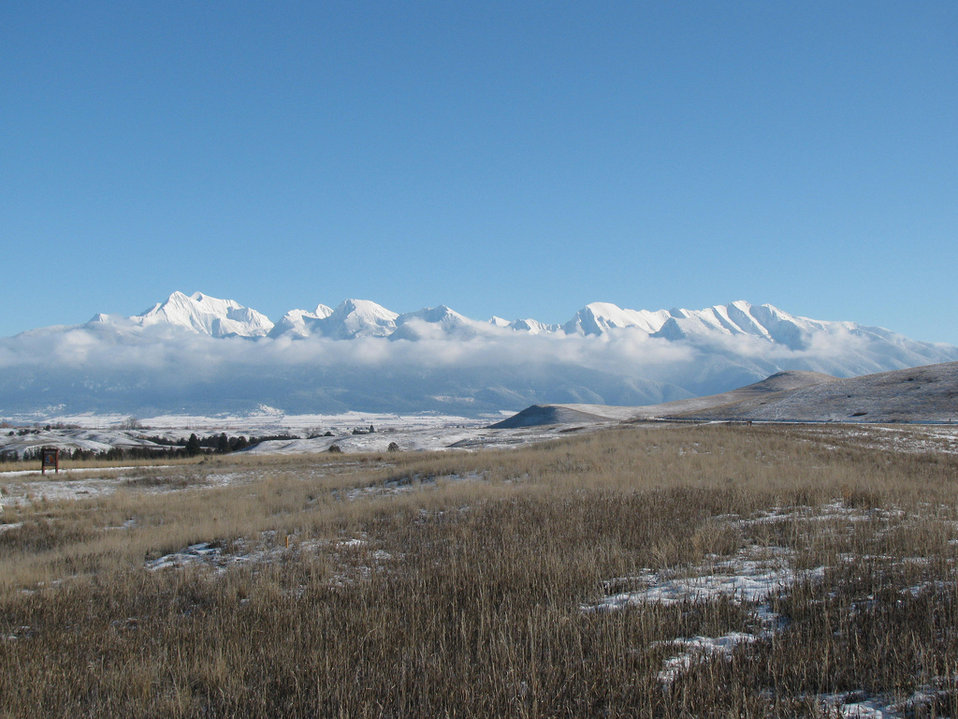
Mission Mountains

National Bison Range, MT
January 2011